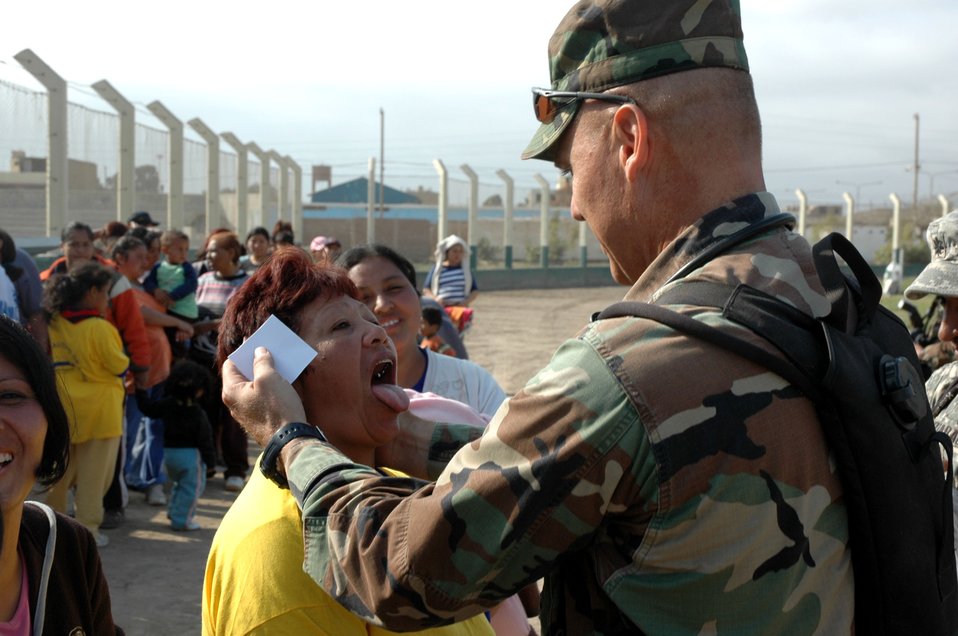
Task force treats more than 500 Peruvian patients

Maj. Joseph Hallock provides an oral exam to a patient Aug. 18 during the Joint Task Force-Bravo's medical humanitarian mission to Pisco, Peru, following an 8.0 magnitude earthquake that devastated the region Aug. 15. At the medical site, personnel provided basic medical care and medicine to more than 500 people the first two days of the mission. Major Hallock is a pediatric nurse practitioner for JTF-B's Medical Element at Soto Cano Air Base, Honduras.